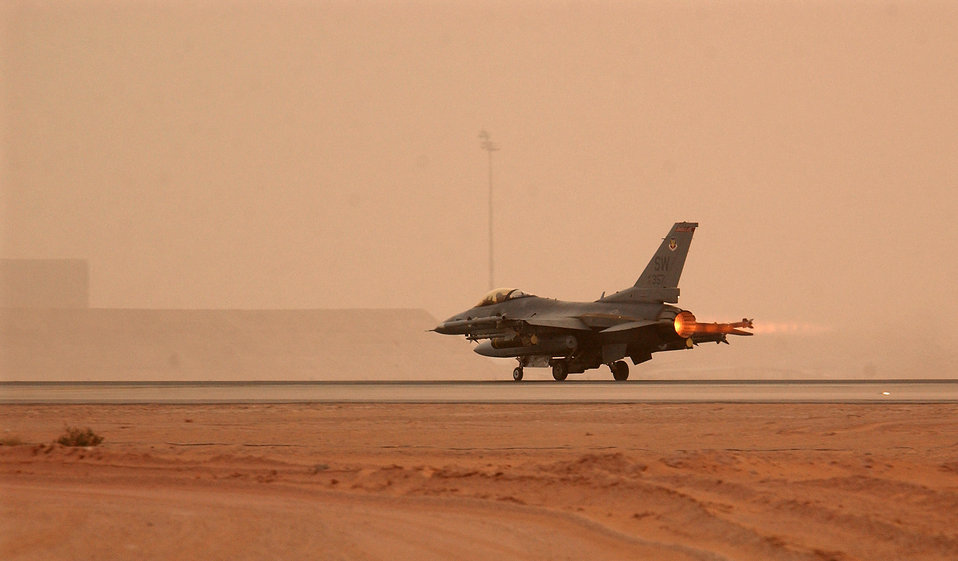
Another sortie starts

OPERATION IRAQI FREEDOM -- An F-16CJ deployed to the 363rd Air Expeditionary Wing takes off for a mission during a sand storm on March 25. Aircraft move around the clock to support Operation Iraqi Freedom at a forward deployed location in Southwest Asia. Operation Iraqi Freedom is the multi-national coalition effort to liberate the Iraqi people, eliminate Iraq's weapons of mass destruction and the regime of Saddam Hussein.